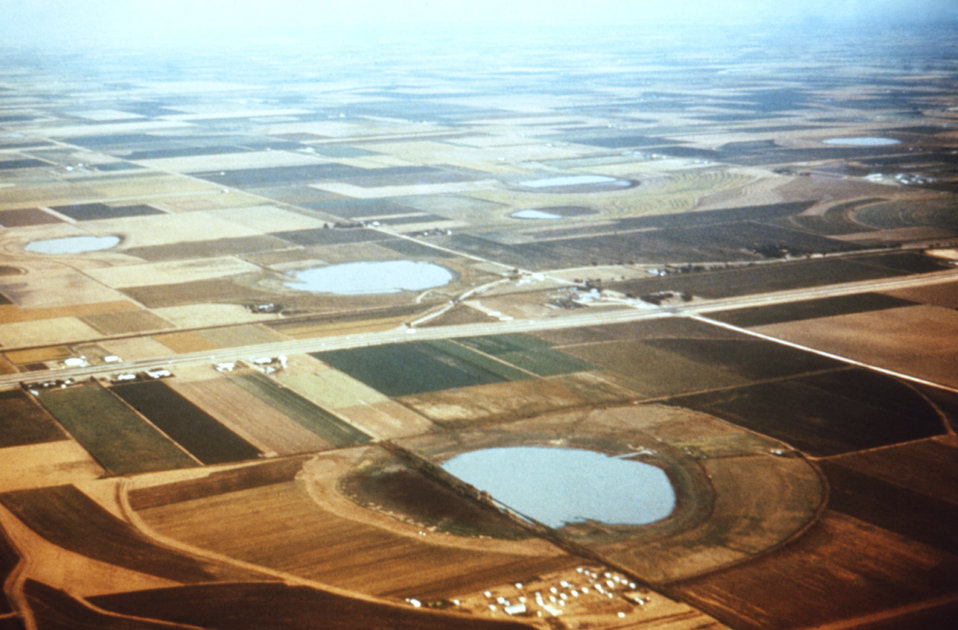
This is a 1976 aerial photograph taken while flying over Playa lakes, Texas during a CDC vector-borne disease investigation.